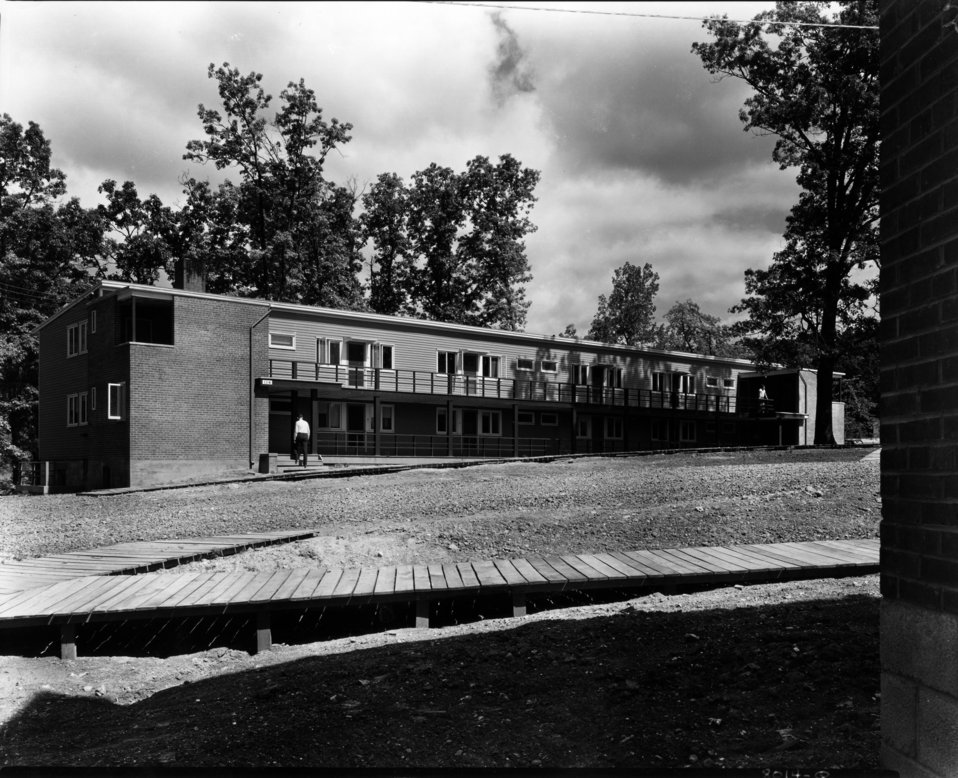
Housing at Oak Ridge